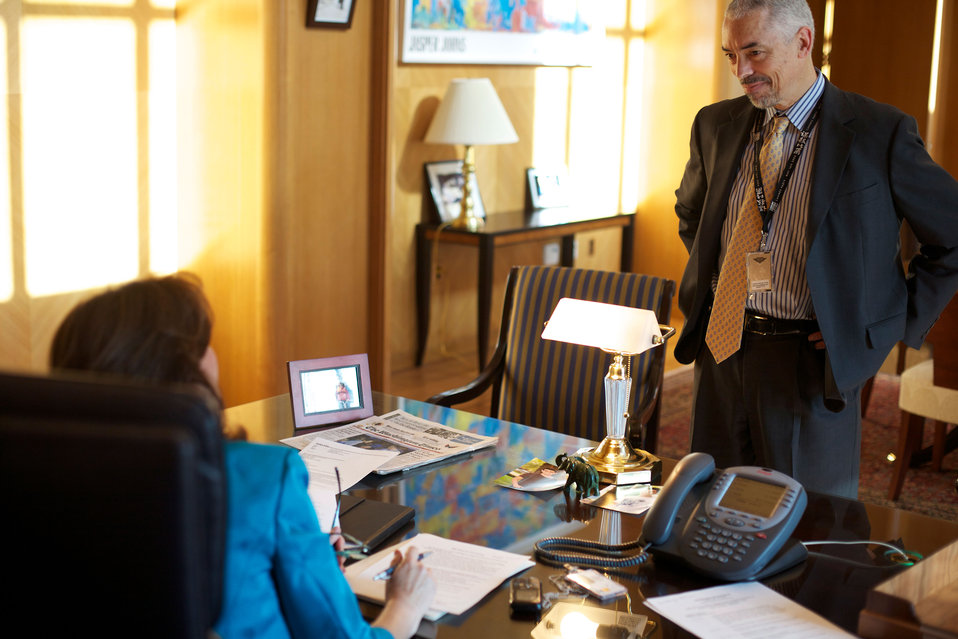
Under Secretary Sonenshine Meets With Senior Advisor Thomson

Under Secretary of State for Public Diplomacy and Public Affairs Tara Sonenshine meets with her Senior Advisor Desson Thomson before her official swearing-in ceremony with Secretary of State Hillary Rodham Clinton at the U.S. Department of State in Washington, D.C., on April 24, 2012.